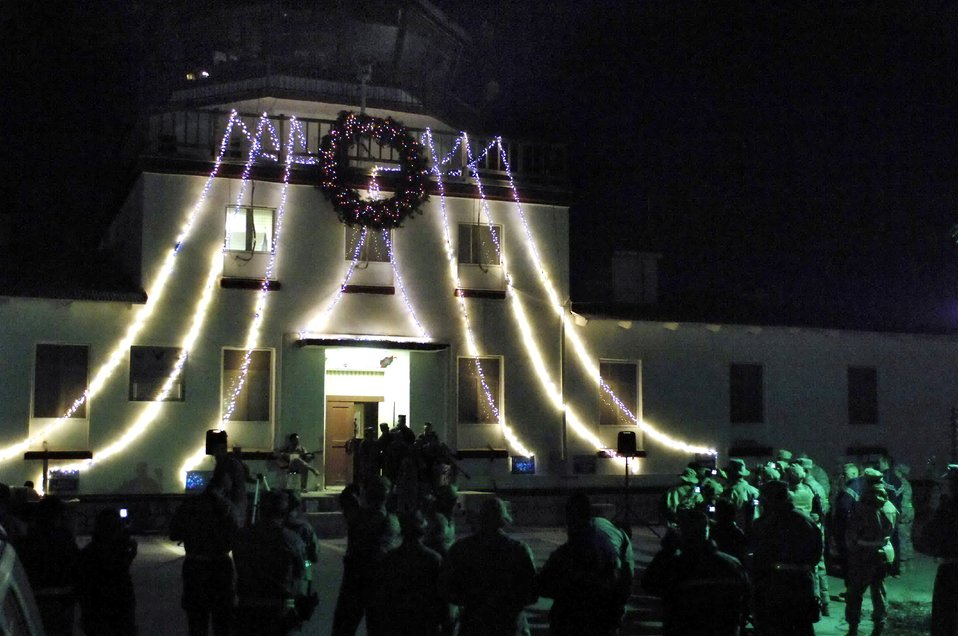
Airmen light up Afghanistan camp with holiday cheer

Members of the 455th Air Expeditionary Wing gather to celebrate the holidays during a tower lighting ceremony Dec. 8 at Camp Cunningham, Afghanistan.